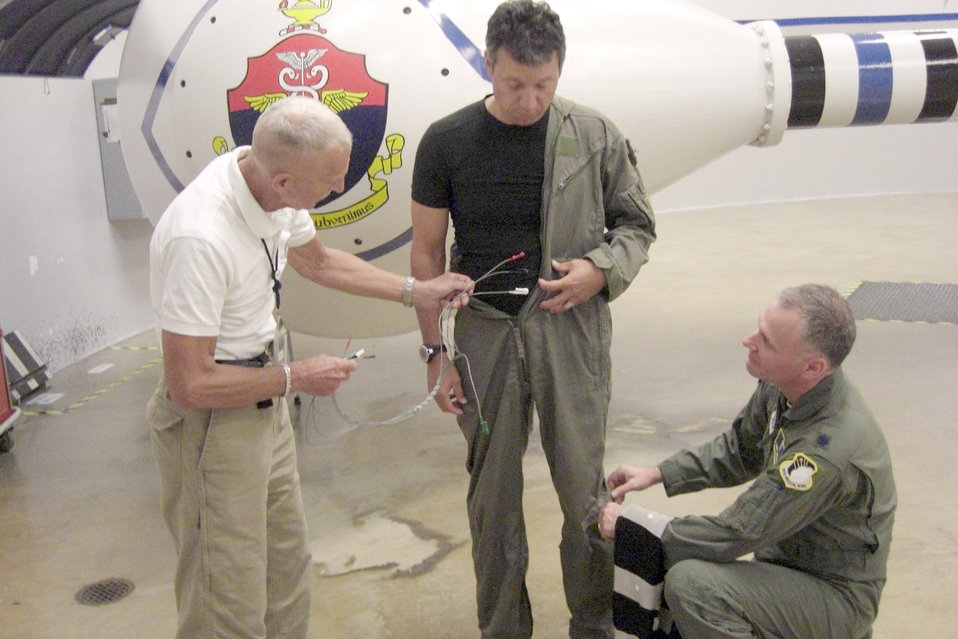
Research provides acceleration protection for pilots

Lt. Col. Lance Annicelli (right) and Dr. Ulf Balldin (left) fit retired Capt. James Kisner with a prototype muscle stimulation suit to perform a centrifuge test as part of an acceleration protection research project they are conducting May 25, 2010, at Brooks City-Base, Texas. The three men designed a garment to be worn by pilots that will automatically sense and contract lower body muscles during and throughout excessive G-forces during flight.